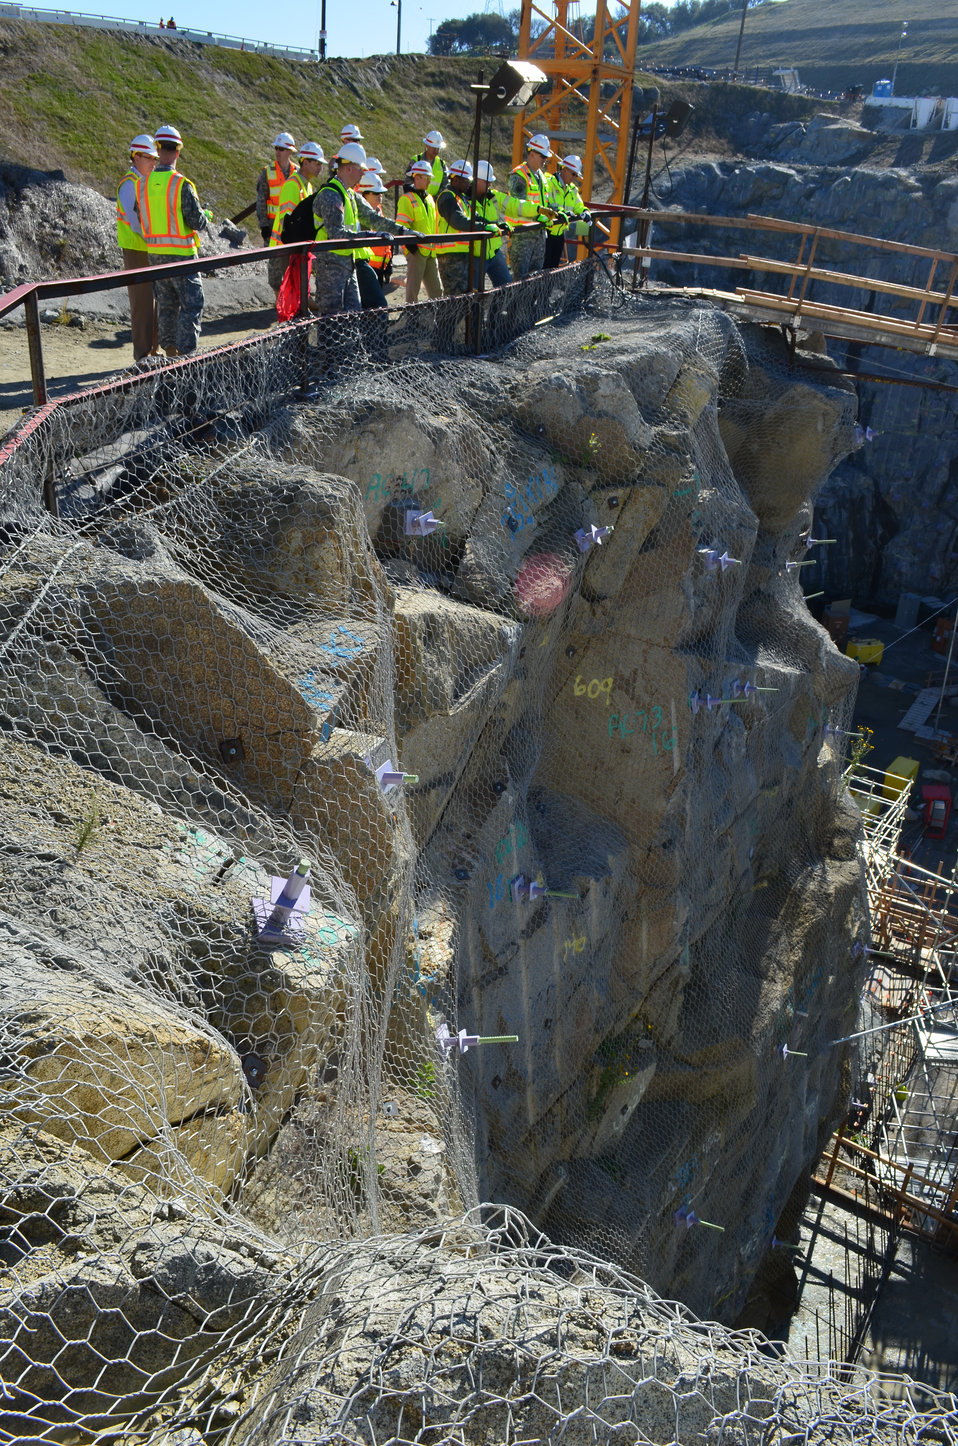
Corps commanding general visits Folsom Dam spillway project

Commanding general of the U.S. Corps of Engineers, Lt. Gen. Thomas P. Bostick, tours the Folsom Dam auxiliary spillway construction site in Folsom, Calif., Jan. 16, 2013, accompanied by members of the project team. The spillway project is scheduled for completion in 2017.